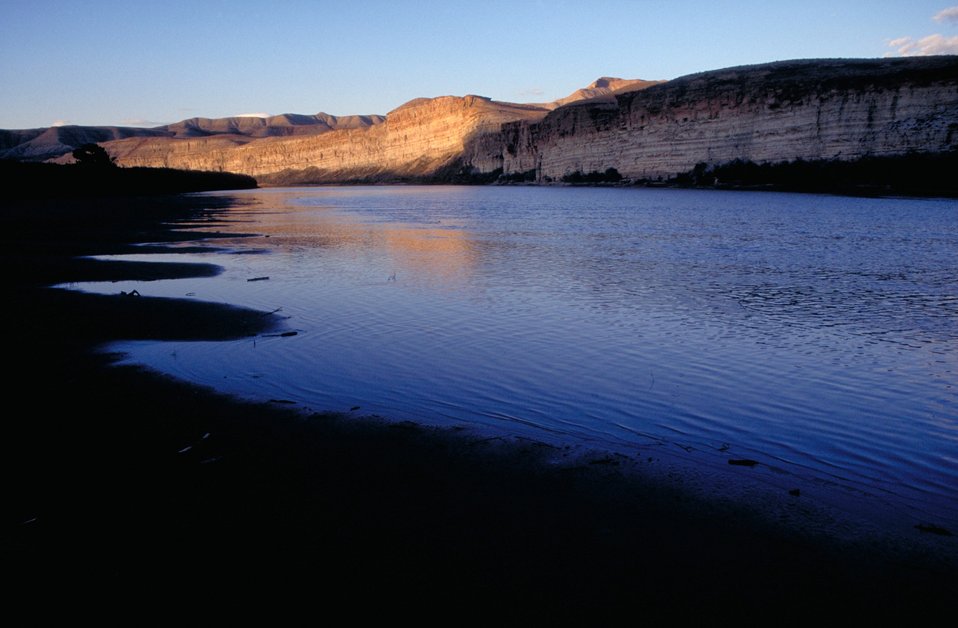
Desolation/Gray Canyons near Price, Utah.